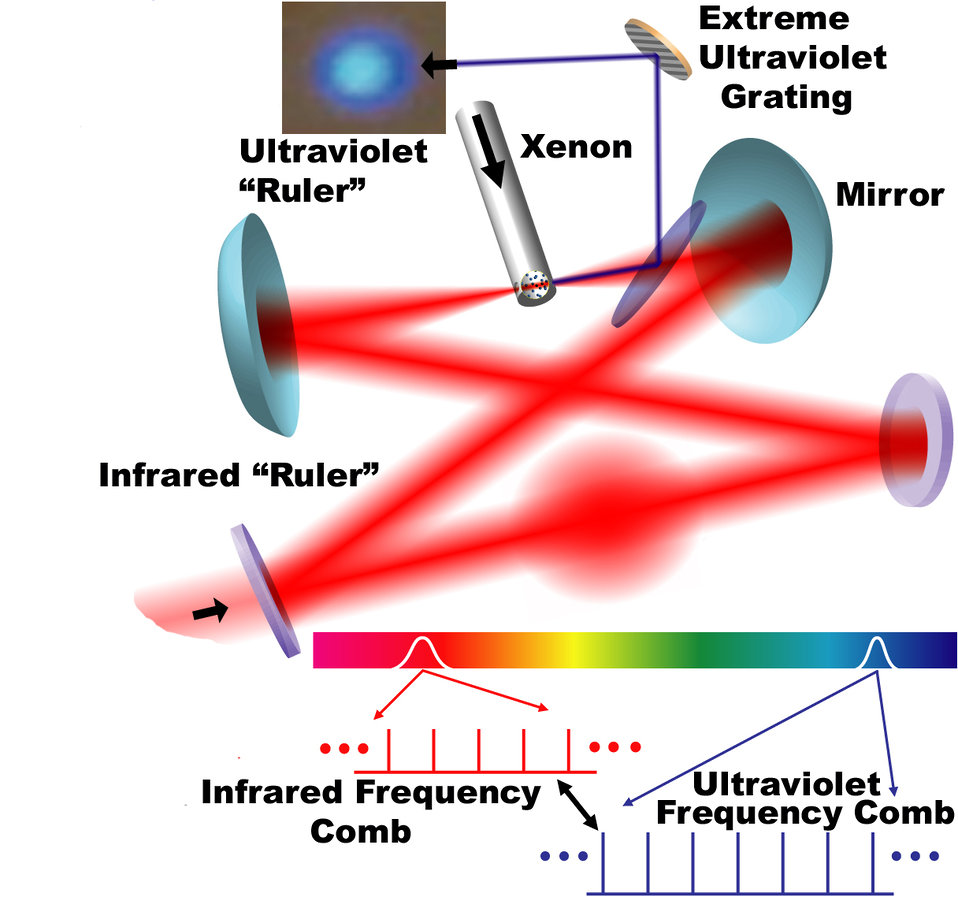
Ultraviolet 'Ruler'

The new JILA ultraviolet 'ruler' is made by exposing xenon gas atoms to a special type of infrared laser light called a femtosecond frequency 'comb.' The laser light is bounced back and forth between highly reflective mirrors to increase its intensity. The process causes the highly excited xenon to emit ultraviolet light pulses spaced identically to the original infrared comb. The new comb improves the precision of measurements at the shorter UV wavelengths, just as a faster shutter speed improves the ability of a camera to 'see' shorter-lived events.